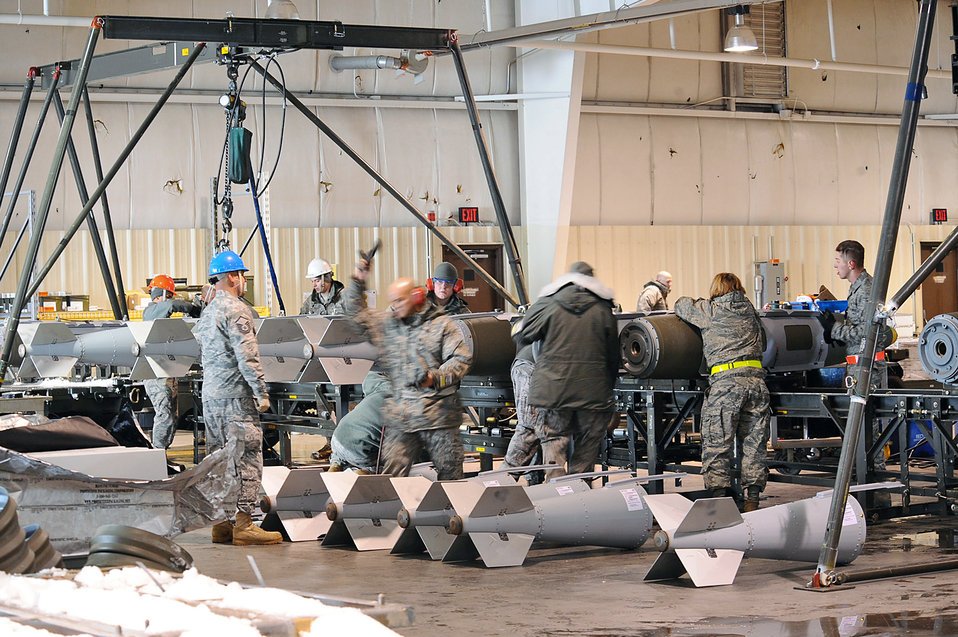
Ellsworth Airmen join Odyssey Dawn

Members of the 28th Munitions Squadron assemble two-thousand-pound bombs March 26, 2011, at Ellsworth Air Force Base, S.D., in preparation for Operation Odyssey Dawn. The Airmen configured several aircraft and hundreds of weapons for operations halfway across the world.